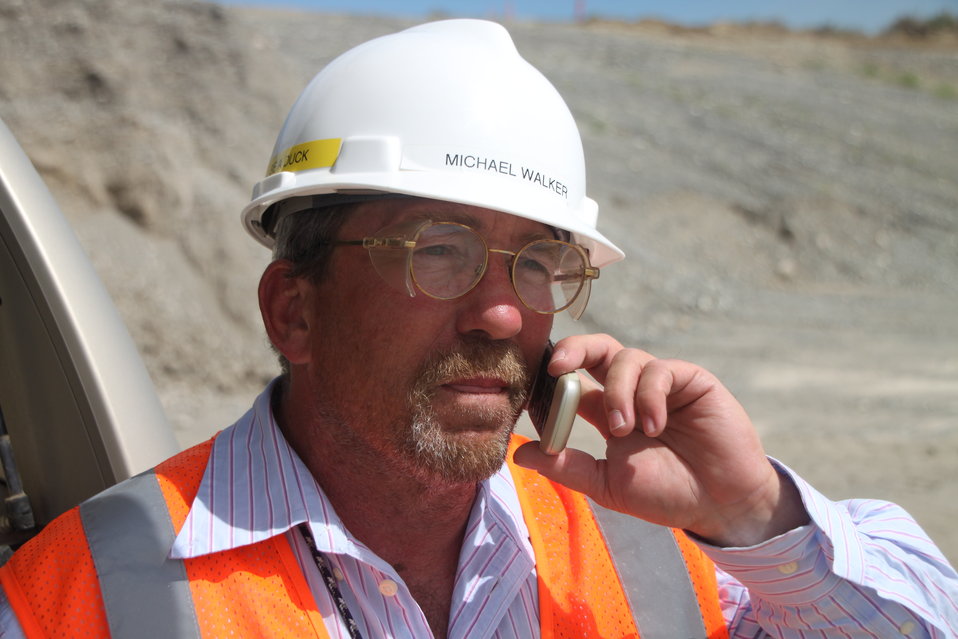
Richland - Michael Walker

Michael R. Walker, Construction Field Execution Manager, CH2M HILL Plateau Remediation Company.

Walker’s proven experience would not have been brought to Hanford were it not for Recovery Act funding for the project. When the Recovery Act accelerated construction of what is the site’s largest groundwater treatment project, Walker was able to move his family to the Tri-Cities and take on the kind of challenge he loves most: construction management. Walker was hired by CH2M HILL Plateau Remediation Company, the DOE contractor hired for the environmental cleanup of Hanford’s Central Plateau.